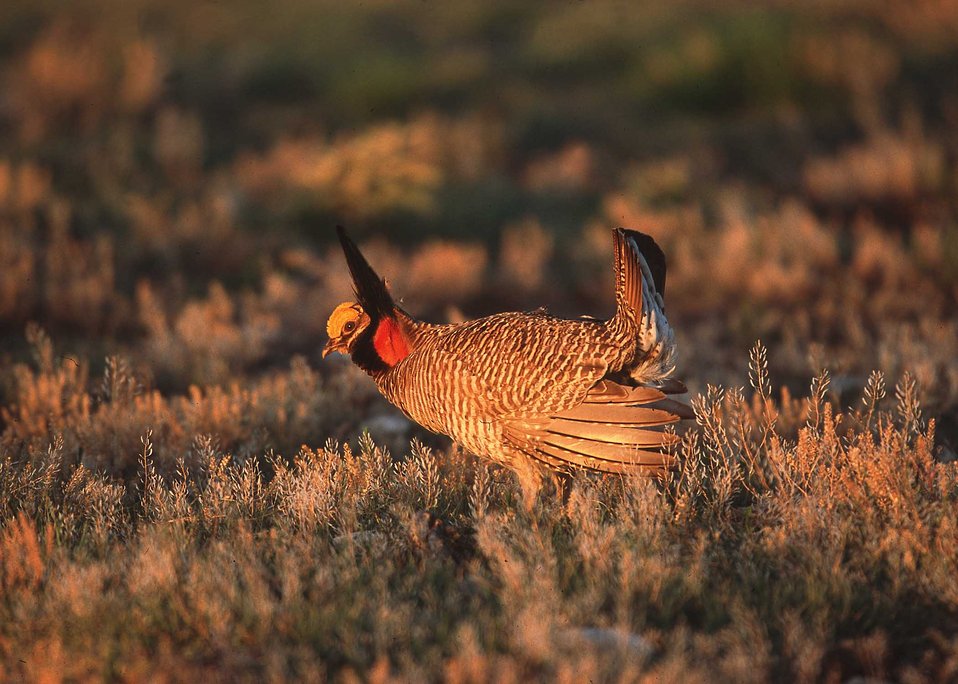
Lesser prairie chicken in Eastern New Mexico.